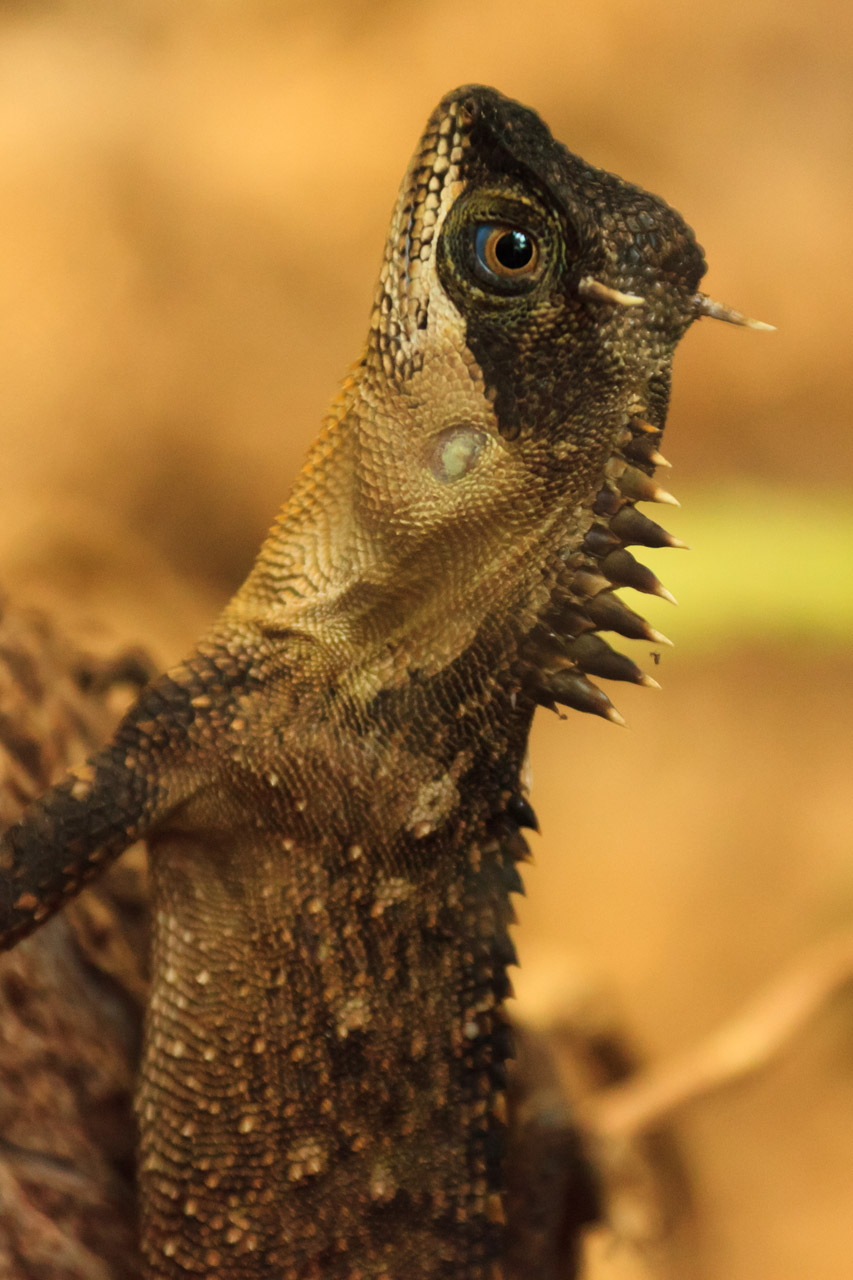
Spiky lizard in vertical position.